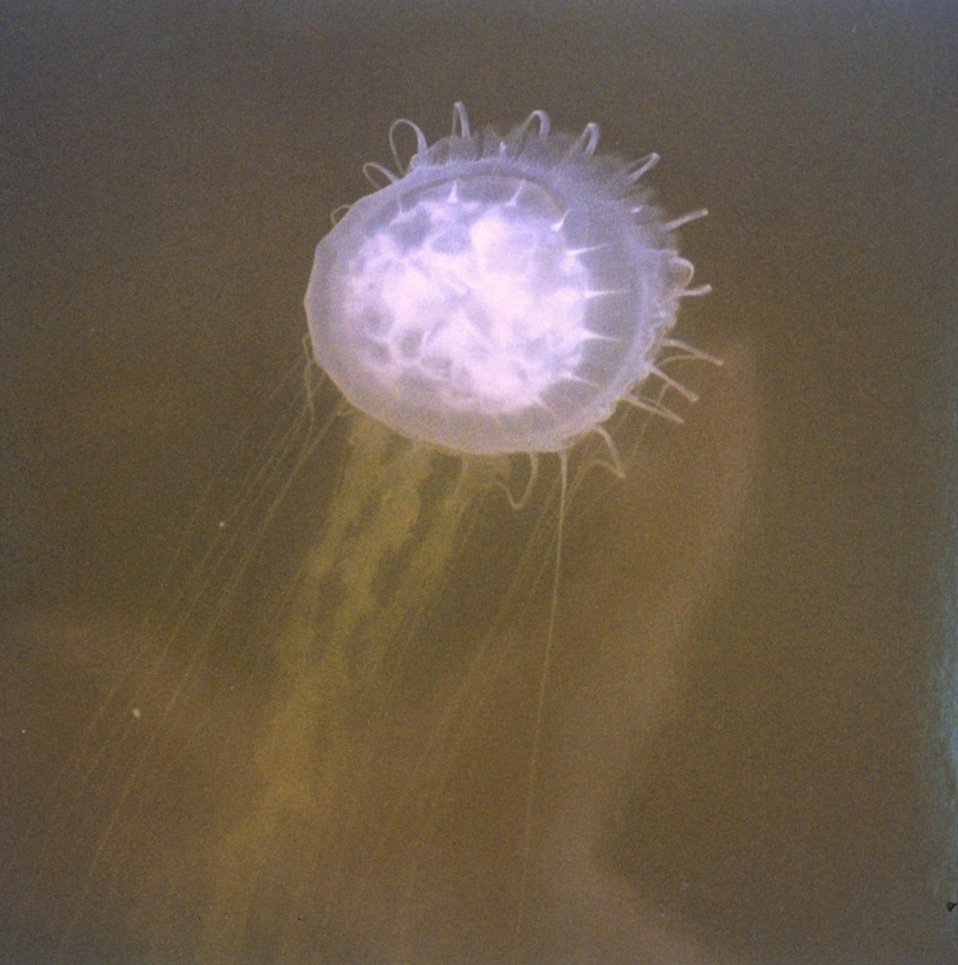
The bane of Chesapeake Bay swimmers, the stinging sea nettle, Chrysaora quiquecirrha.